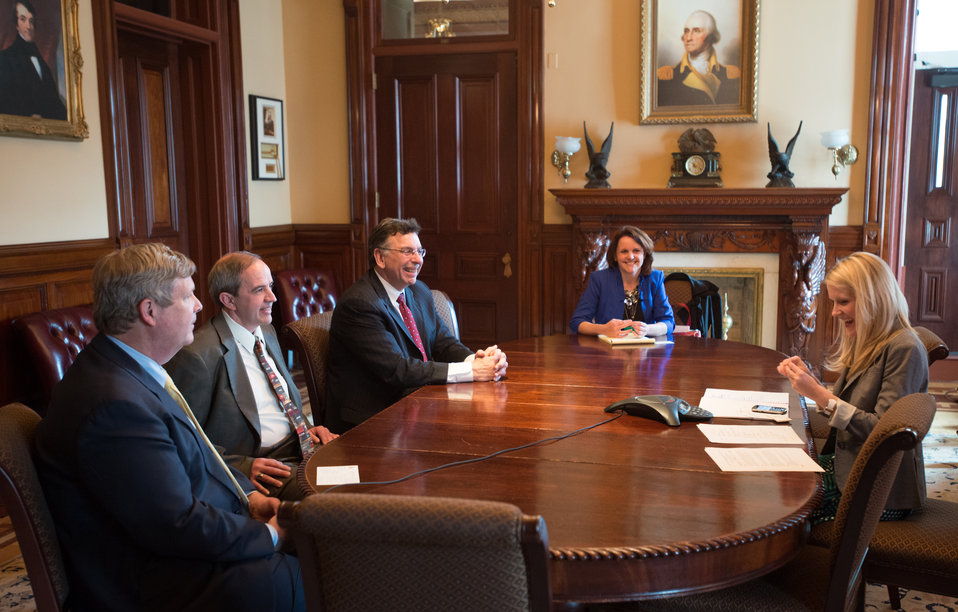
(L to R) Agriculture Secretary Tom Vilsack, Spruce Haven Farm and Research Center General Partner Doug Young, Innovation Center for U.S. Dairy Chief Executive Officer (CEO) Tom Gallagher, and Dairy Management Inc. Strategic Initiatives Vice President Christina McDermott chat with Agriculture Office of Communication Press Secretary Courtney Rowe as she establishes a teleconference call with news media, after the signing of a Memorandum of Understanding (MOU) at the Innovation Center For U.S. Dairy Sustainability Council Meeting, on Wednesday, Apr. 24, 2013. The teleconference took place in the historic Secretary of War suite, at the White House, in Washington, D.C. The objectives of the MOU are to increase the construction of anaerobic digesters and explore innovative ways to use products previously considered waste streams from dairy production, processing and handling.